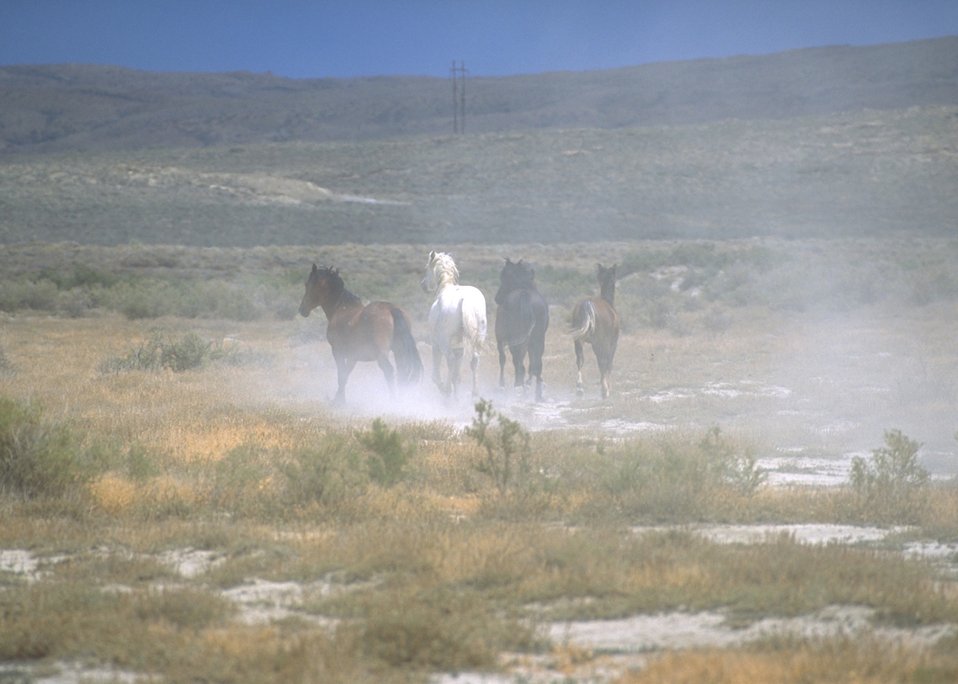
Wild horses, Rock Springs Field Office.